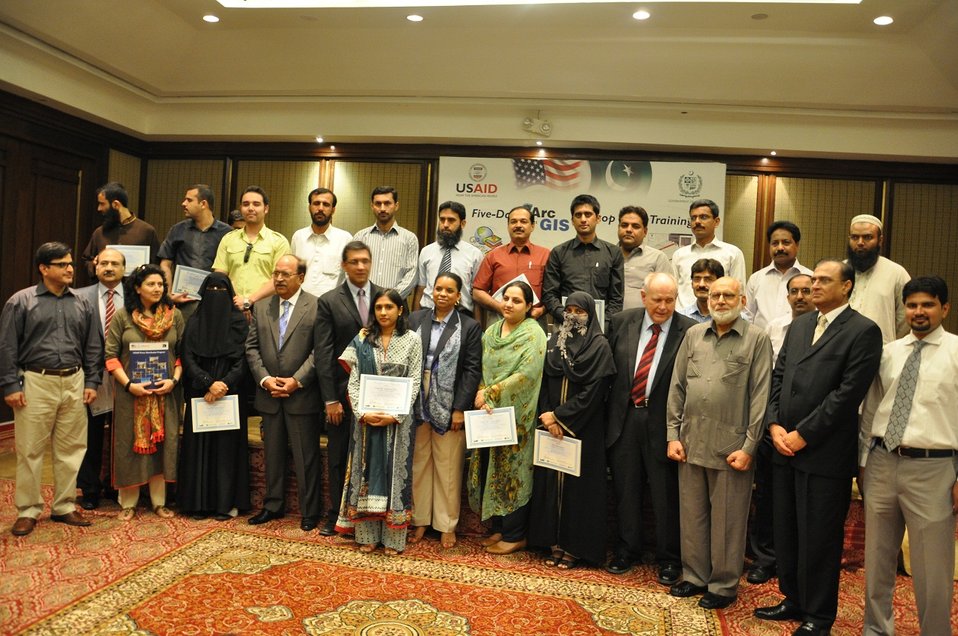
Planning and Engineering Workshop at Lahore

Lahore, July 20, 2012: The United States is strengthening Pakistan’s energy sector and helping to end energy shortages. In this effort, Acting Director USAID Punjab Gail Spence distributed certificates to mangers from nine power sector distribution companies (DISCOs) who completed a U.S.-funded five-day Planning and Engineering training program. The training aims to modernize the Planning and Engineering (P&E) sectors of the DISCOs improving energy distribution across Pakistan. “I am confident that thanks to this training, Pakistan will now be better able to meet its power sector reform targets and reduce the energy crisis,” Ms. Spence remarked.

The USAID Power Distribution Program organized the training in close collaboration with the Lahore Electric Supply Company (LESCO). The four year USAID Power Distribution Program is a testament to the United States’ commitment to supporting Pakistan’s energy sector. Through the Power Distribution Program, USAID is helping DISCOs modernize equipment, receive expert consultations, and introduce international best practices to ensure a more reliable supply of power to consumers.